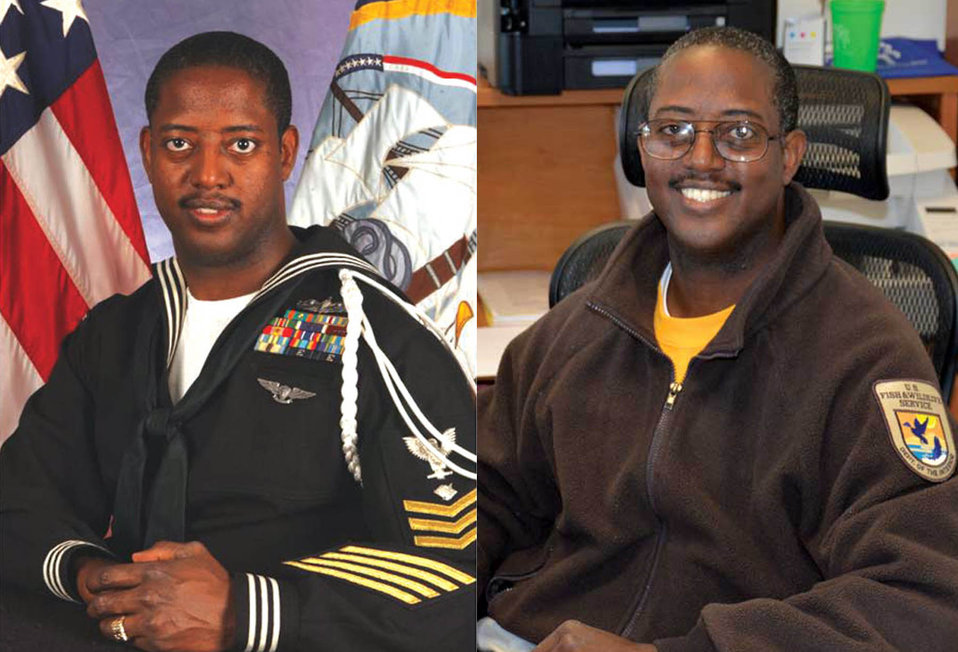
Jerome Barksdale.
.
Jerome Barksdale entered the U.S. Navy in May 1988. During his military career he was assigned to aviation, afloat and shore-based units in Mississippi, California, Pennsylvania, and Florida. While assigned to these units Barksdale made deployments and port visits to Cuba, the Caribbean, Denmark, Greece, France, Japan, Mexico, Panama, Puerto Rico, Scotland, Spain, and Sweden. He retired from the Navy as a Personnelman First Class in June 2008..
.
He reentered government service in February 2012 as the administrative assistant for the Service’s North Florida Ecological Services Office in Jacksonville..
.
Barksdale’s professional awards and decorations include three (3) Navy Achievement Medals, six Good Conduct Medals, two National Defense Service Medals, Joint Meritorious Unit Award, U.S. Coast Guard Special Operations Service Ribbon, Meritorious Unit Commendation, U.S. Coast Guard Meritorious Team Commendation, Navy Battle “E” (Efficiency) Ribbon, Global War On Terrorism Service Medal, Armed Forces Service Medal, Military Outstanding Volunteer Service Medal, two Sea Service Deployment Ribbons, two Armed Forces Reserve Medals, Expert Pistol Shot Medal, and the Expert Rifleman Medal. .
.
Barksdale resides in Jacksonville, FL with wife Tonya.